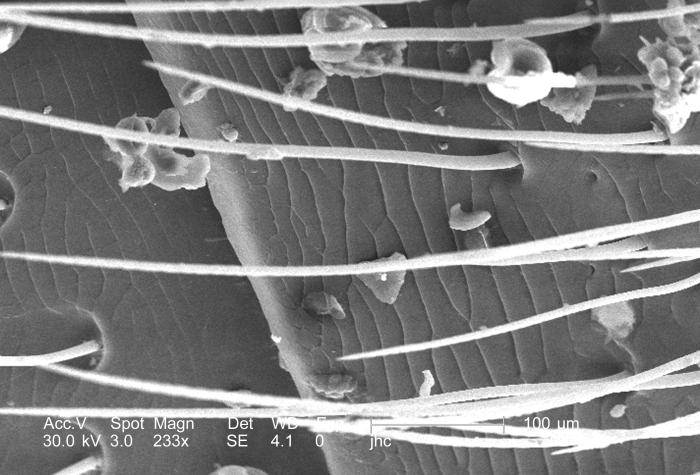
Under the moderate magnification of 233x, this scanning electron micrograph (SEM) revealed some of the morphologic features encountered on the ventral surface of a male carpenter bee's, Xylocopa virginica, abdomen.